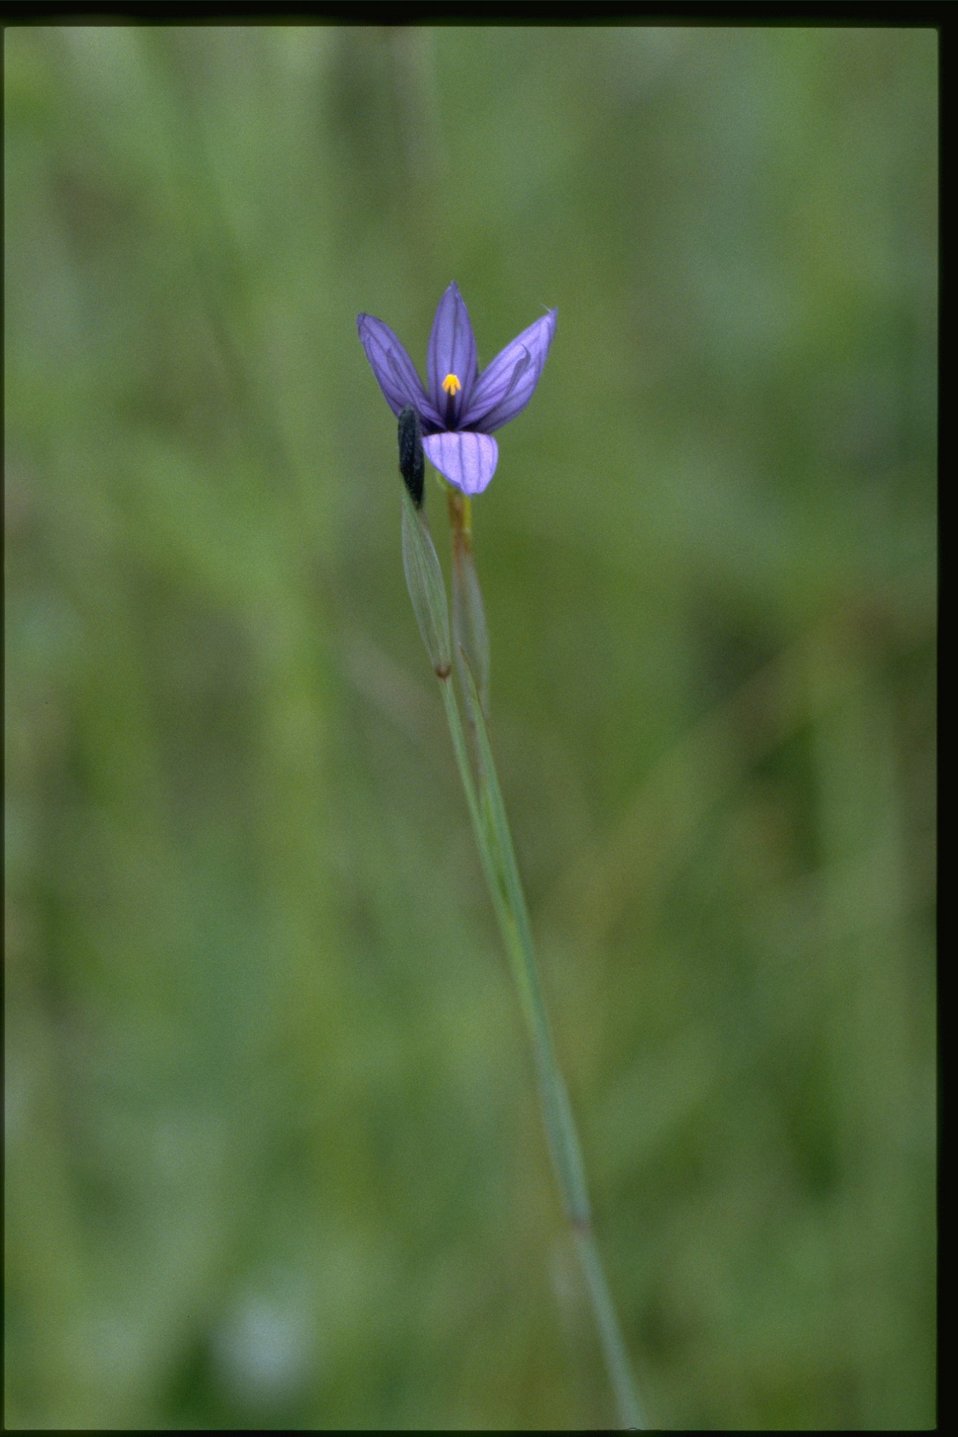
Medium shot of Sisyrinchium idahoense.